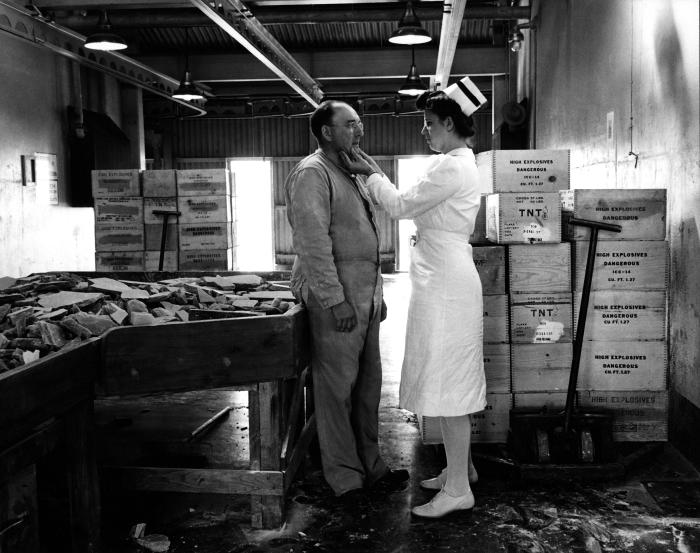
This historical 1943 image, which was provided by the Center for Disease Control's (CDC), National Institute for Occupational Safety and Health (NIOSH), depicted an inhouse nurse examining the head and neck region of a military TNT ordnance manufacturing plant male employee. A poisonous chemical, TNT will irritate the skin upon contact, and actually will change the skin's color to a bright yellow-orange. Prolonged exposure leads to liver damage, anemia, enlargement of the spleen, and a compromised immune system, to name a few of its negative effects. Trinitrotoluene is also a known carcinogen. Note that this man was not wearing a filtered breathing mask, or gloves, which would have protected him from accidentally airborne particulates, or spills.